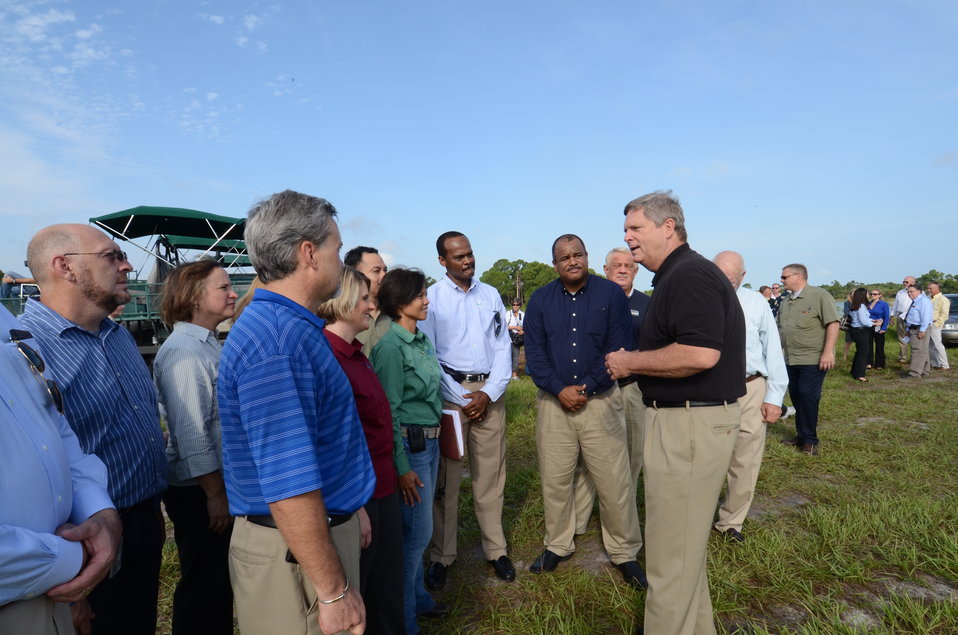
Agriculture Secretary Tom Vilsack today announced $100 million in financial assistance to acquire permanent easements from eligible landowners in four counties and assist with wetland restoration on nearly 24,000 acres of agricultural land in the Northern Everglades Watershed, FL, on Thursday, August 8, 2011.